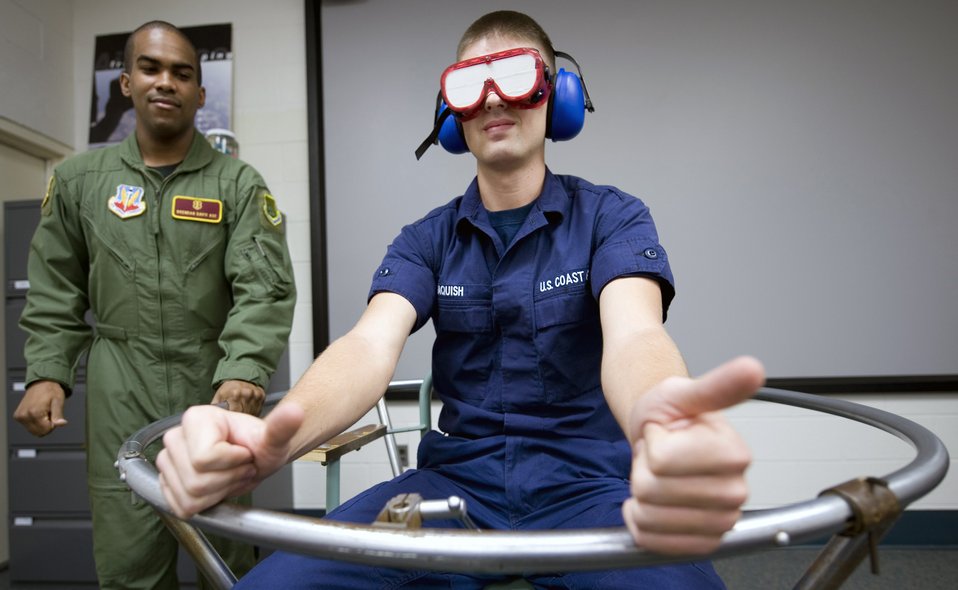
Coast Guard students train in altitude chamber

Airman 1st Class Brendan Davis (left) takes Airman Paul Jaquish through a spatial disorientation exercise March 23 at Langley Air Force Base, Va. A spinning device, called a Barany Chair, is used to simulate aircraft maneuvers using centrifugal force. The chair produces disorientation similar to what pilots commonly experienced during flight maneuvers. Airman Davis is an aerospace physiology apprentice with the 1st Aerospace Medicine Squadron and Airman Jaquish is a Coast Guard aviation maintenance technician student from Elizabeth City, N.C., Coast Guard Station.